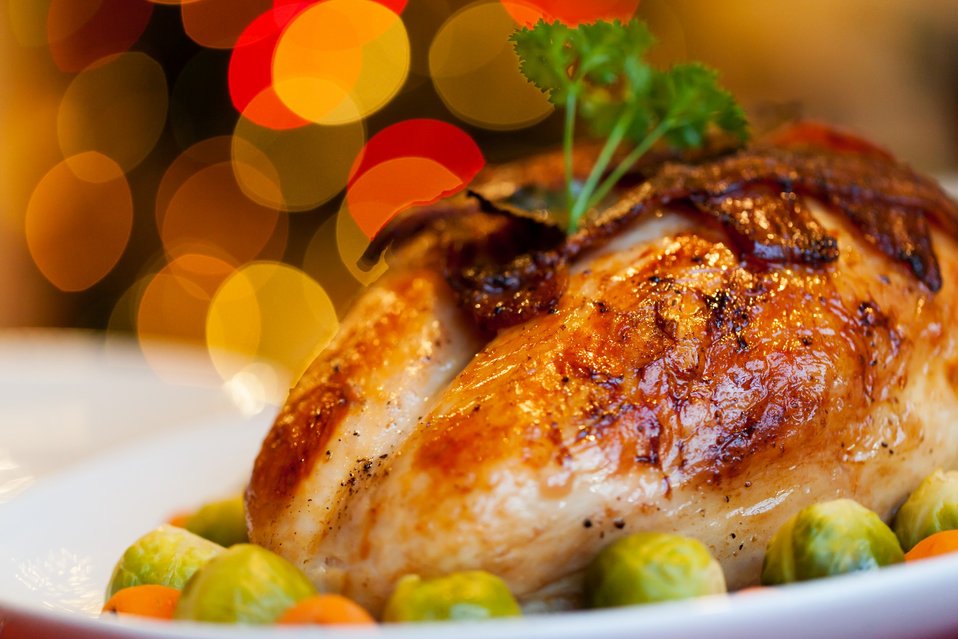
Festive food

Turkey dinner with christmas lights in the background.